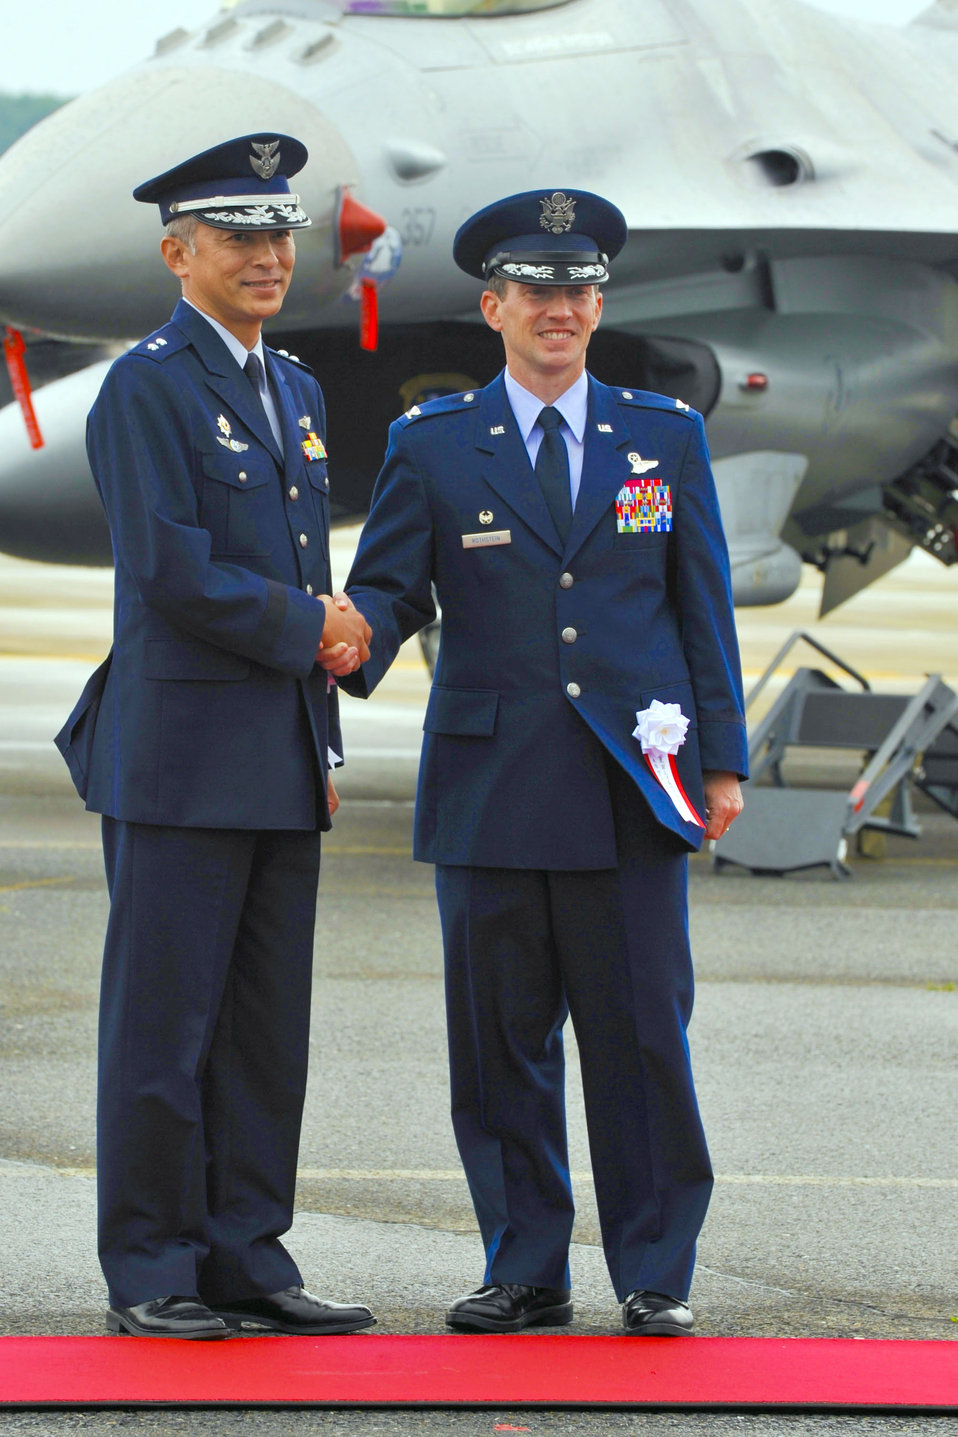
Misawa Air Festival

Maj. Gen. Hideo Maehara (left), Japan Air Self-Defense Force 3rd Air Wing commander, and Col. Michael Rothstein, 35th Fighter Wing commander, announced the start of the Misawa Air Festival at Misawa Air Base, Japan, Sept. 19, 2010.